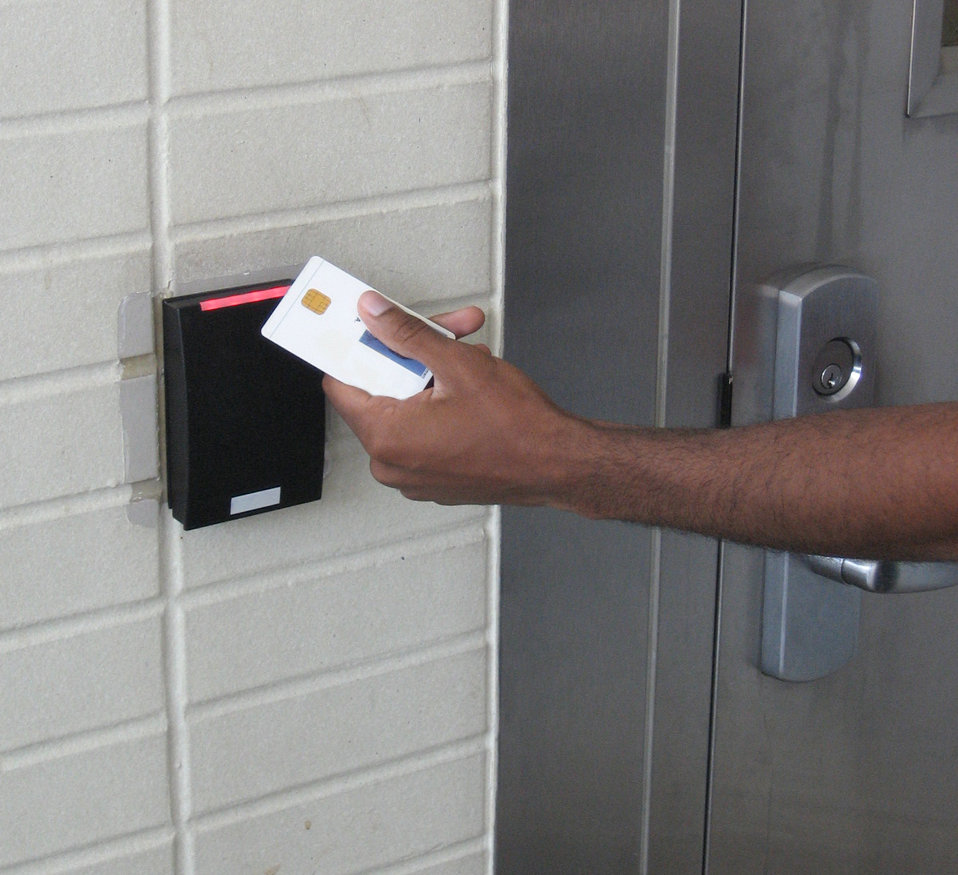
PIV card

Government employees use PIV cards for facility access.